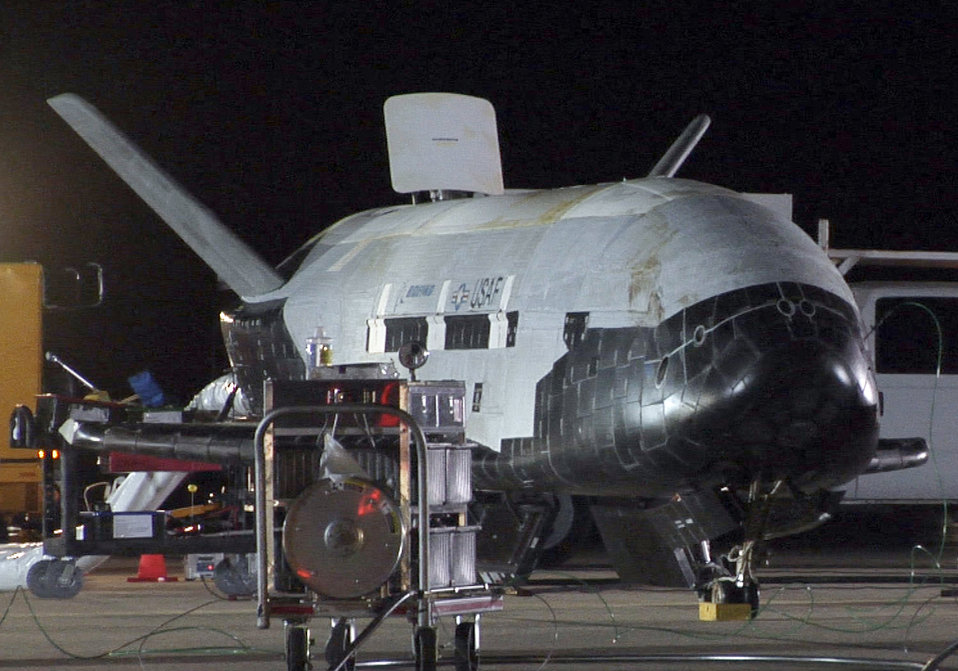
X-37B Orbital Test Vehicle 1

The Air Force's first unmanned re-entry spacecraft, X-37B Orbital Test Vehicle, landed at 1:16 a.m. Dec. 3, 2010, at Vandenberg Air Force Base, Calif. The X-37B conducted on-orbit experiments for more than 220 days during its maiden voyage.